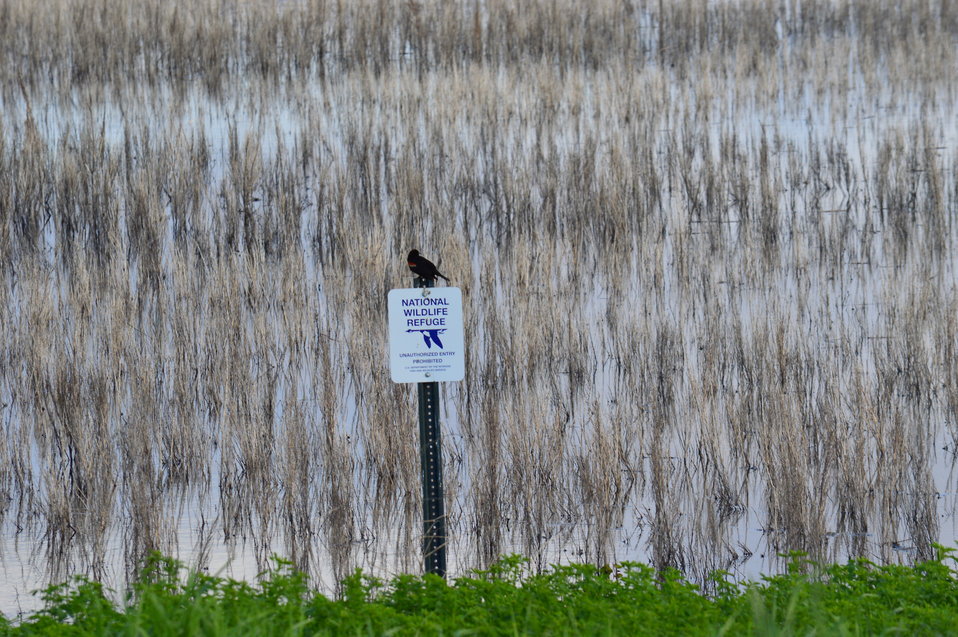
Red-winged blackbird sits atop National Wildlife Refuge Sign

Scenery and wildlife at Sand Lake National Wildlife Refuge in South Dakota